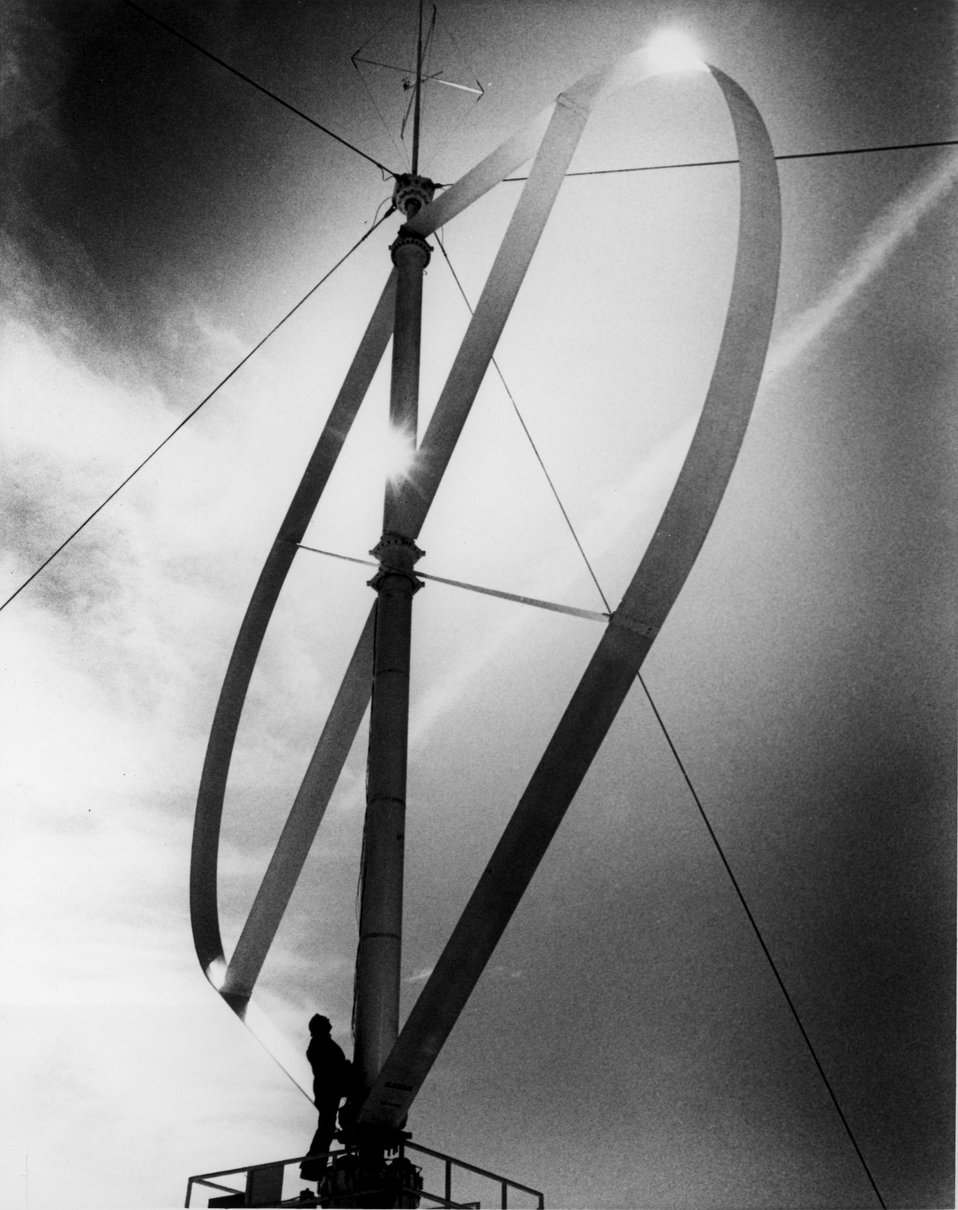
The new 55-foot-diameter vertical axis wind turbine now undergoing initial testing at Sandia Laboratories in Albuquerque, as part of the U.S. Department of Energy's wind energy program. c. 1977